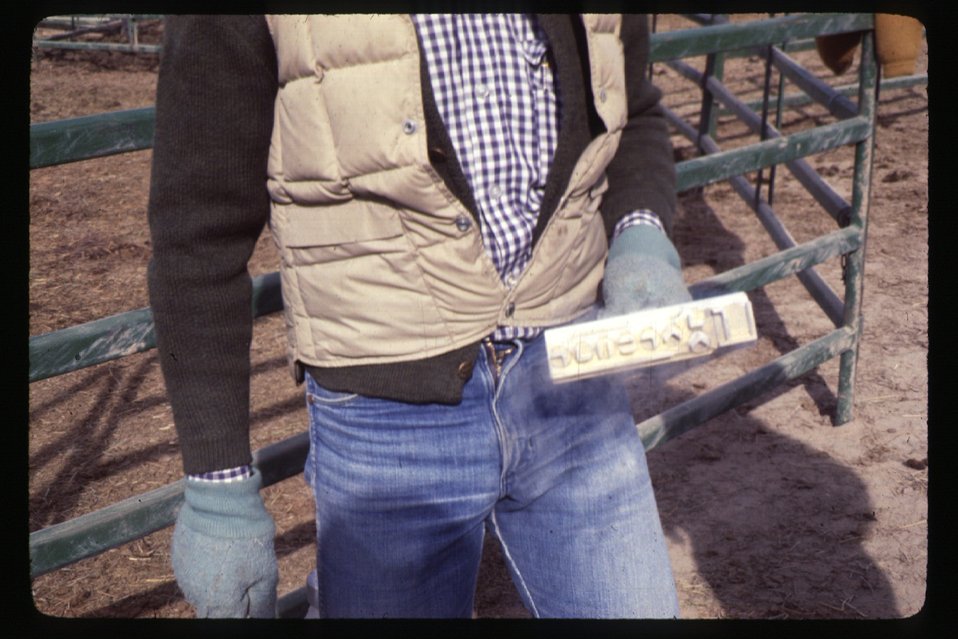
Horse freeze brand Wild Horse and Burro Adoption Program LSRD Lower Snake River District